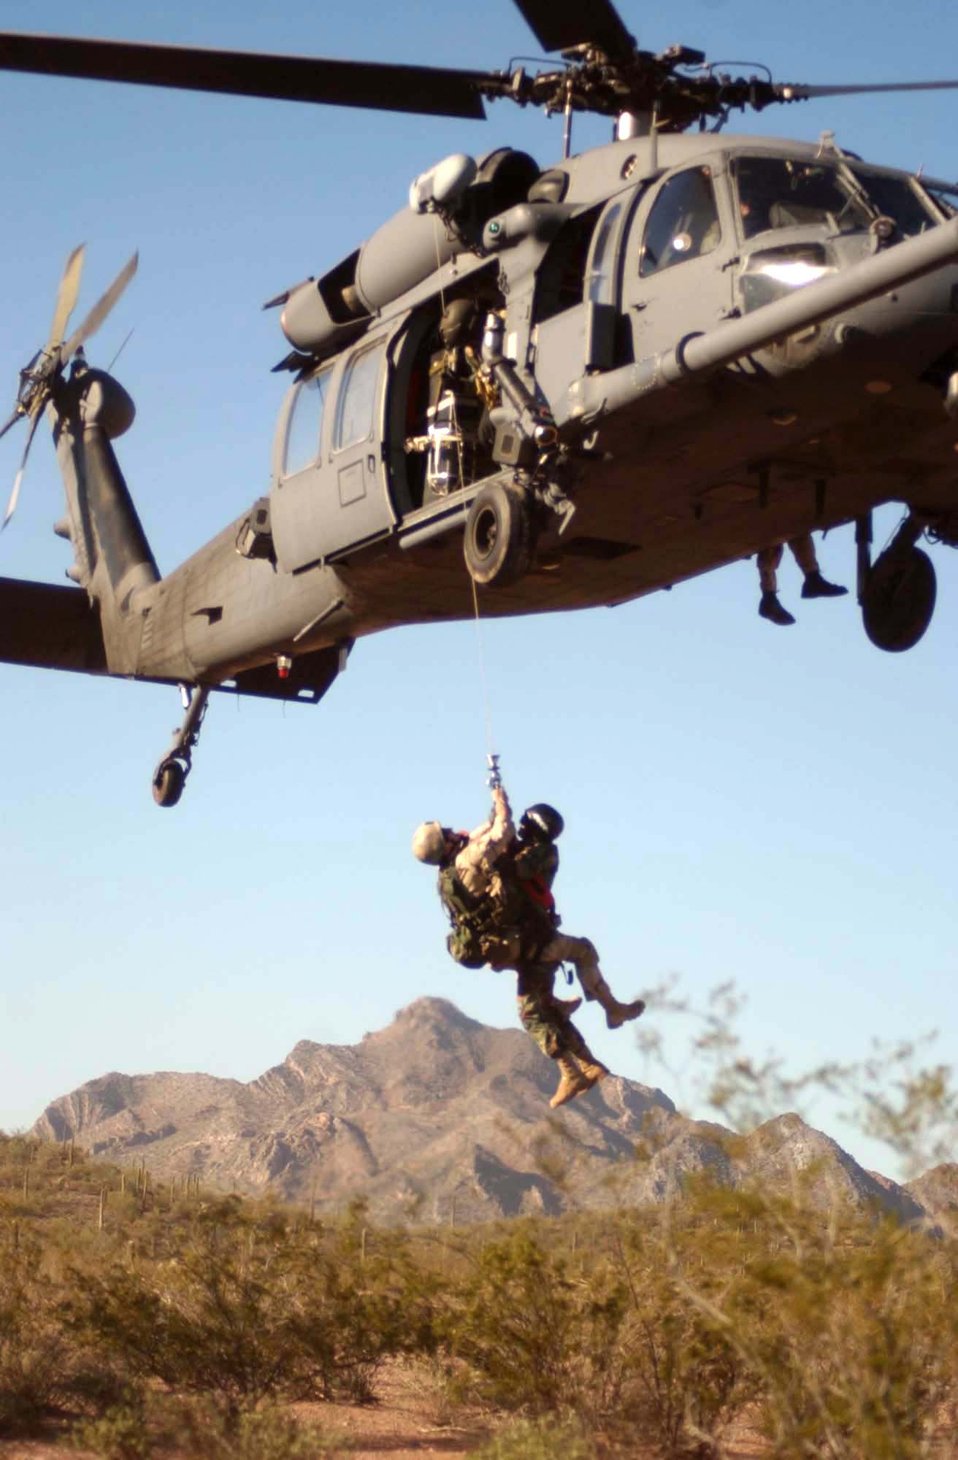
Hoist 'em up

NEAR TUCSON, Ariz -- Pararescuemen from the 304th Rescue Squadron at the Portland Air National Guard Base, Ore., practice their rescue skills with an HH-60 Pave Hawk flown by a crew from the 305th RQS at nearby Davis-Monthan Air Force Base. During the exercise here, the 304th RQS Airmen practiced rescue scenarios and desert survival skills.